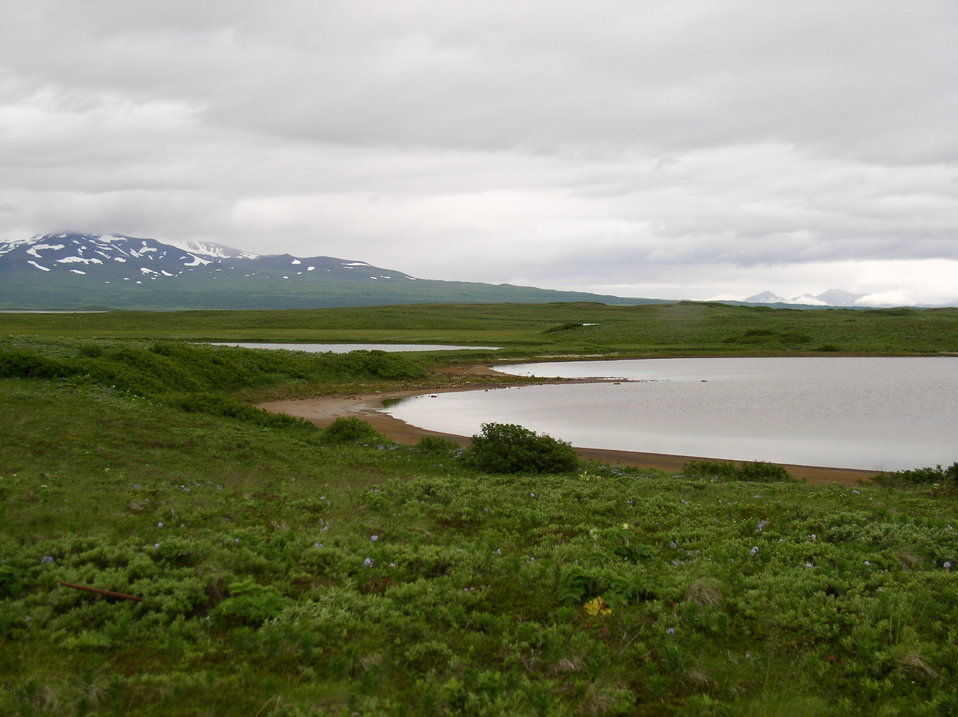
tundra and lake

Izembek National Wildlife Refuge